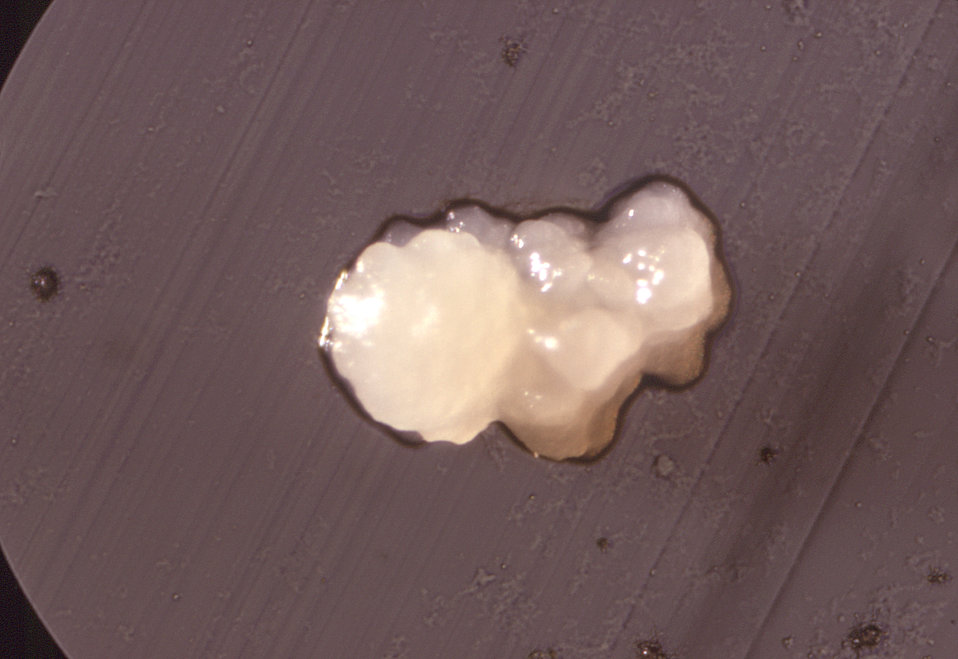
Magnified 18.5X, this image depicts the morphologic characteristics displayed by a mature Gram-positive, Actinomyces naeslundi bacterial colony, of the 'rough' strain, W-1096, which was cultivated on an unknown culture medium.